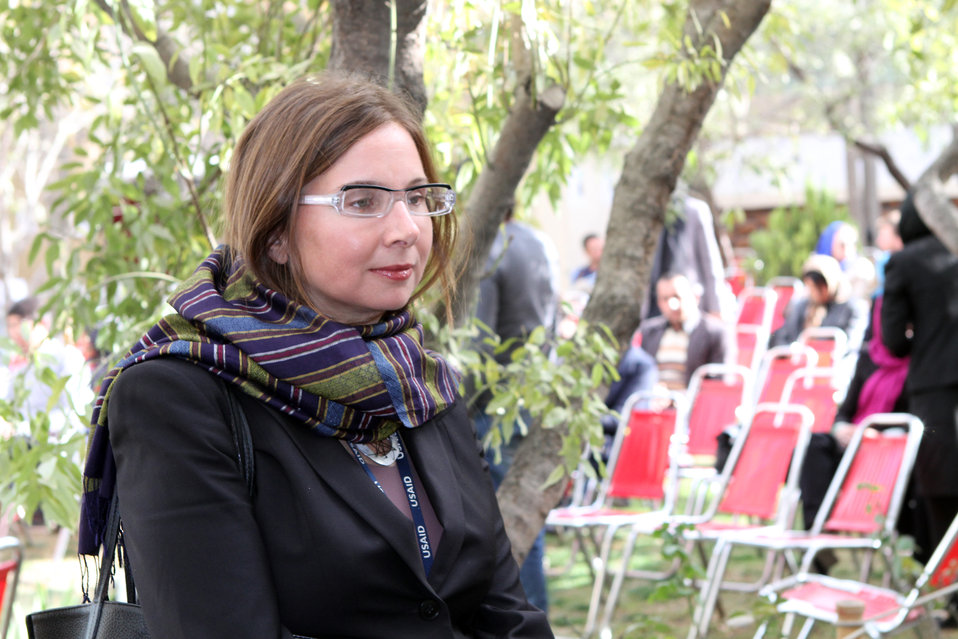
Afghan Youth Festival

Internews - USAID